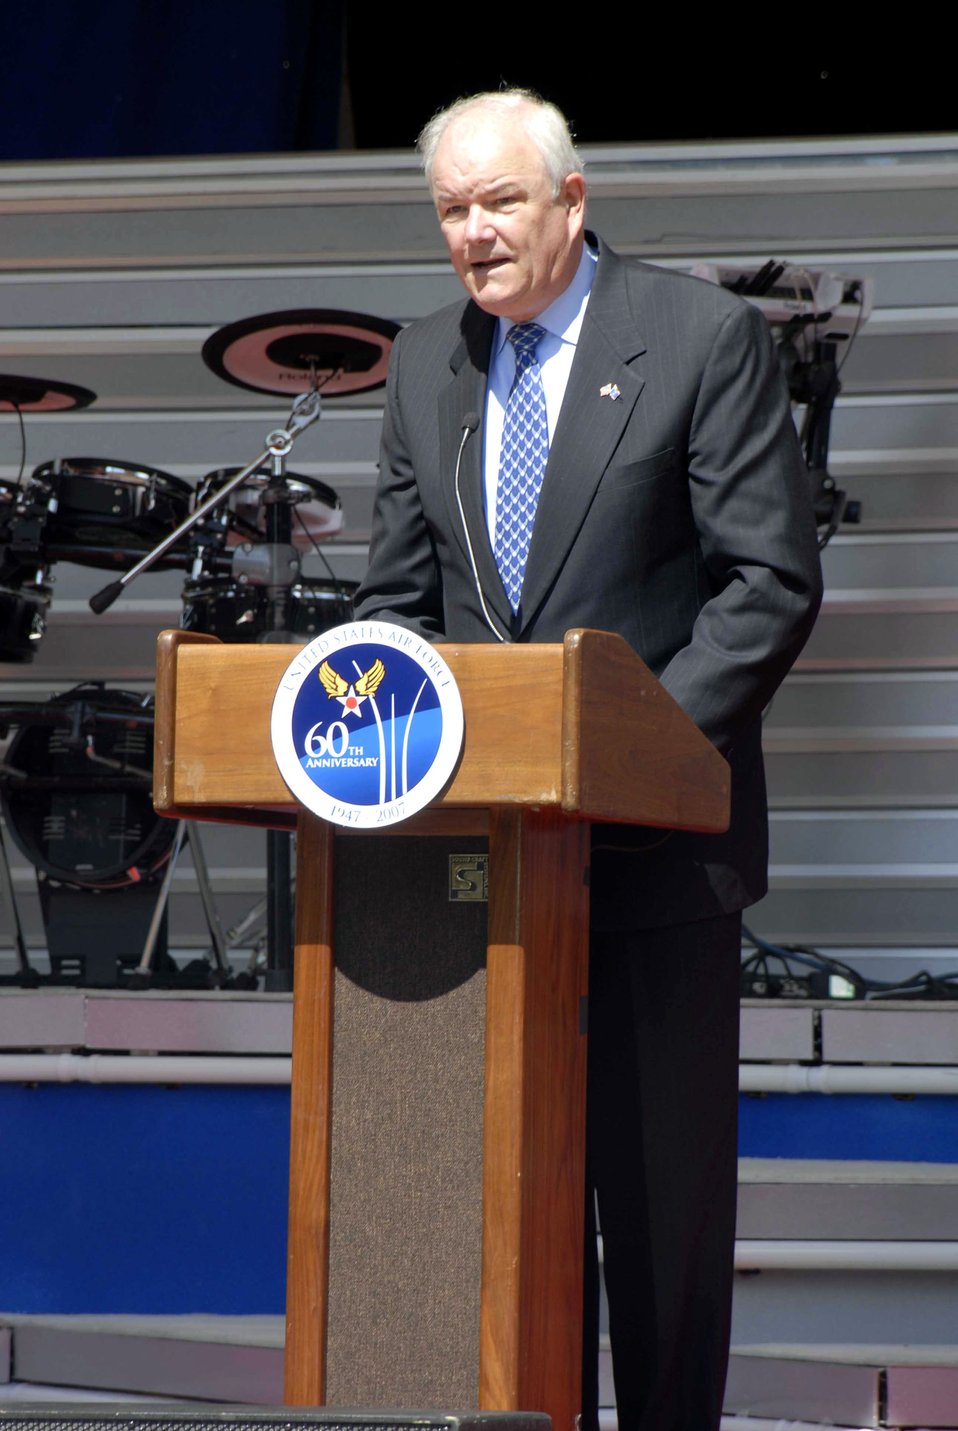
Air Force secretary announces provisional Cyber Command

Secretary of the Air Force Michael W. Wynne announces the Air Force is officially standing up a provisional Cyberspace Command during his address at the Air Force 60th anniversary celebration Sept. 18 at the Pentagon.